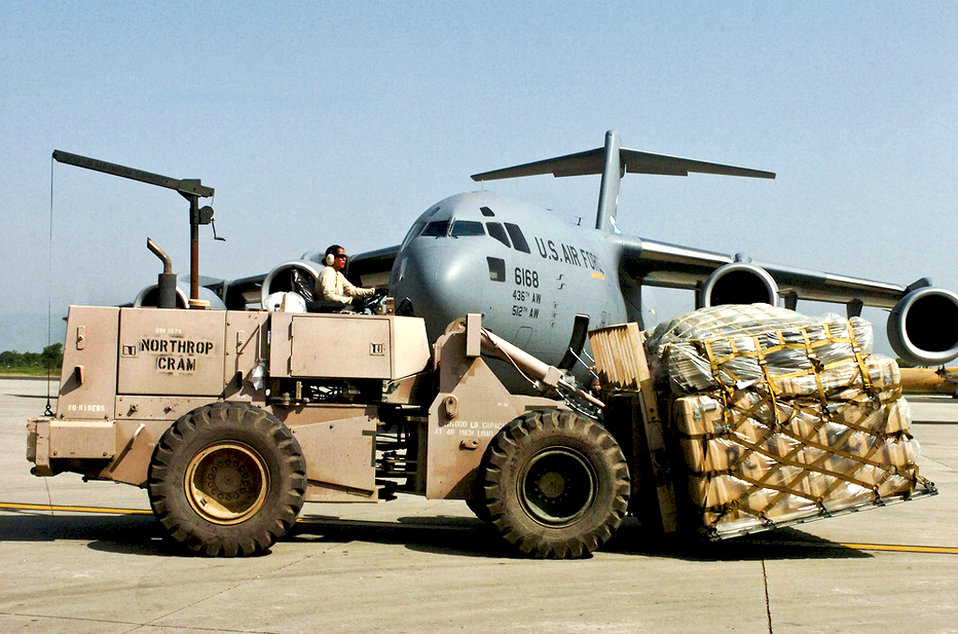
Coming through

An Airman from the 621st Contingency Response Wing transports supplies in front of a C-17 Globemaster III on the flightline at Pakistan Air Force Base Chaklala in Rawalpindi, Pakistan, Aug. 29, 2010. Airmen assigned to the 621st CRW are working with Pakistani officials to support humanitarian airlift operations.